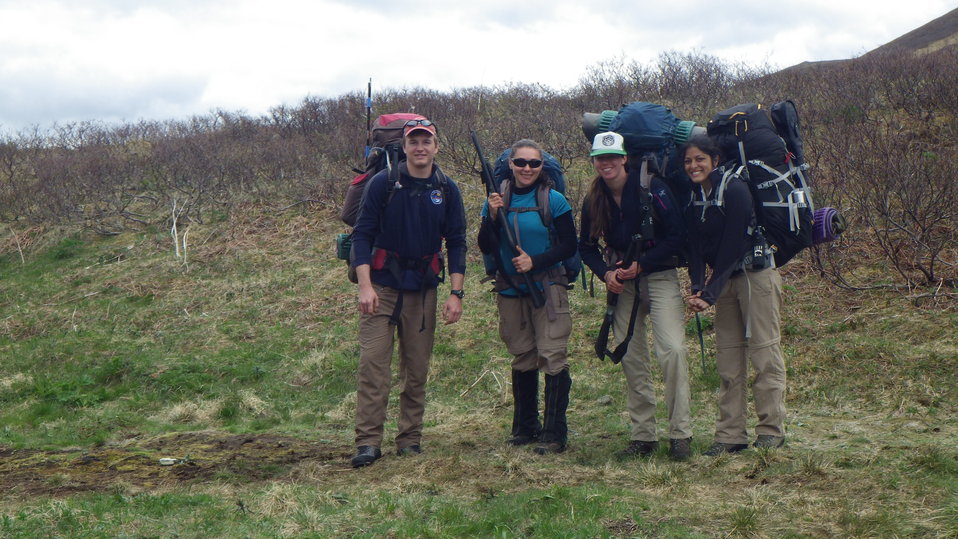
2012 Kittlitz's murrelet research crew

Photo Credit: USFWS
Source: Kodiak NWR